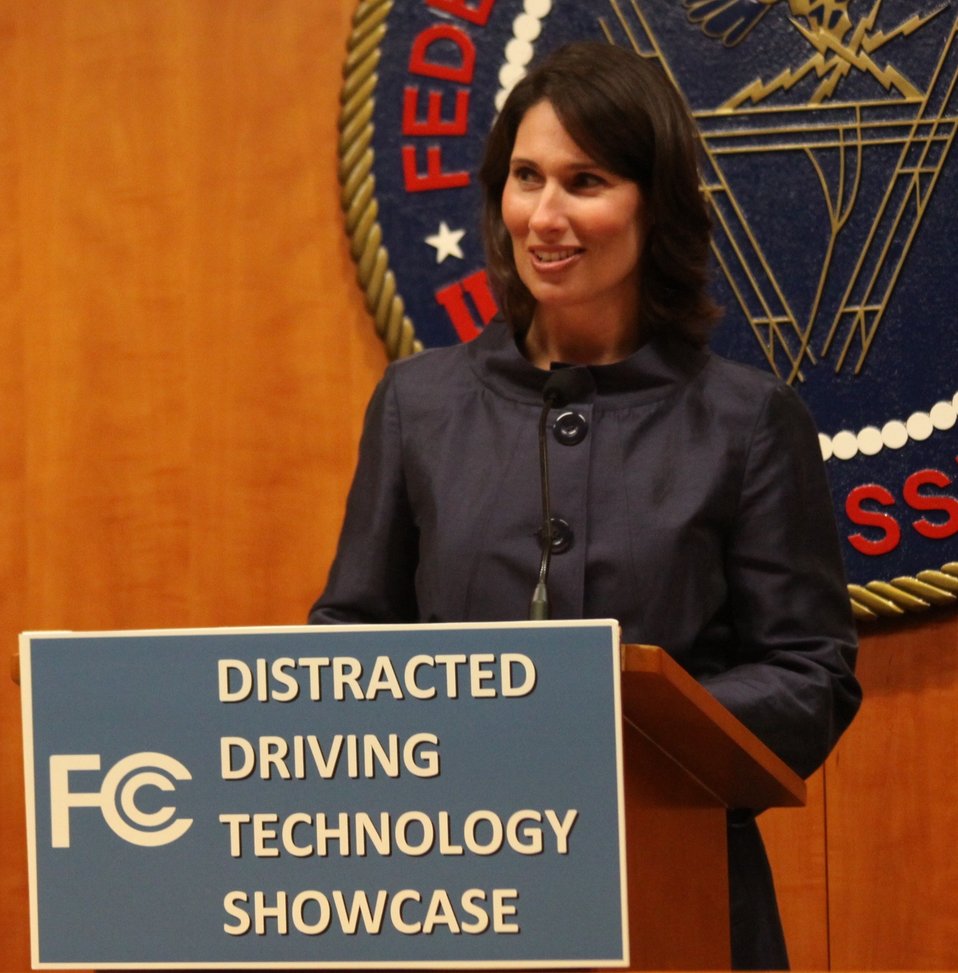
Remarks from Deborah Herman, Chairman of the National Transportation Safety Board (NTSB): Distracted Driving Technology Showcase April 19, 2013